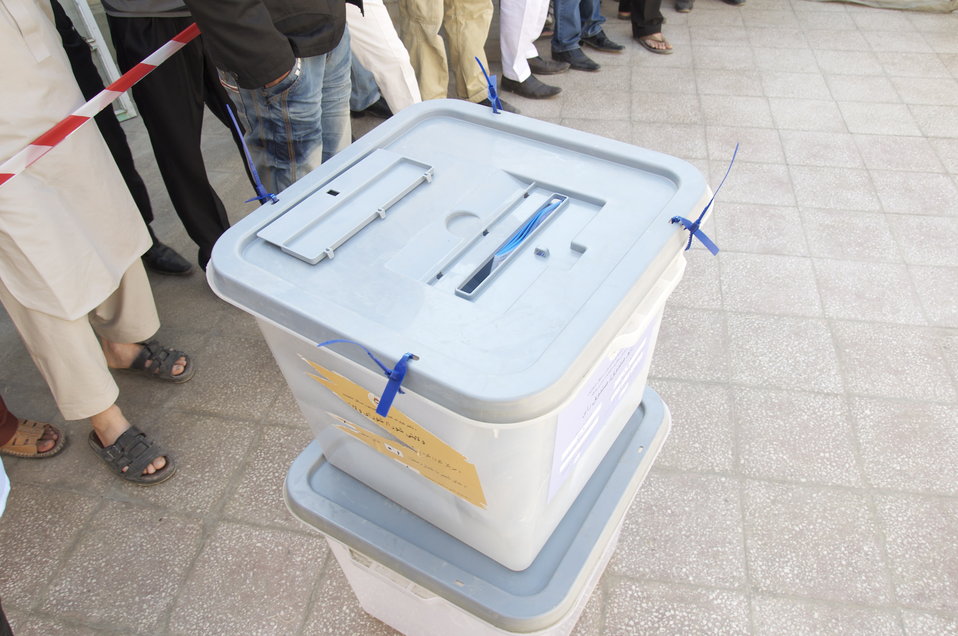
Ballot Boxes